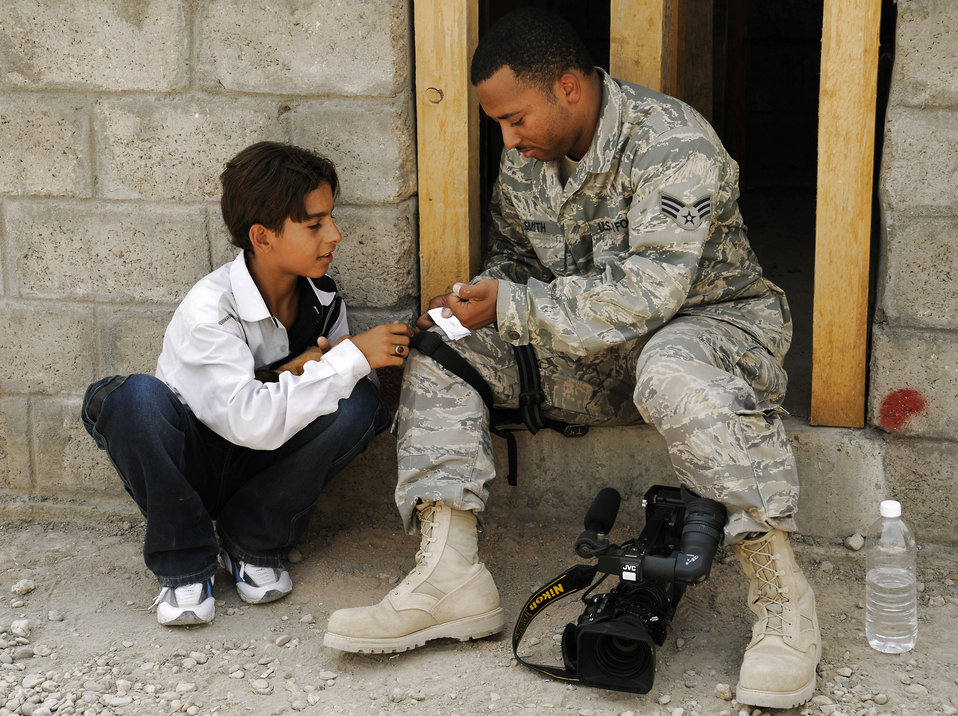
RED HORSE Airmen give Iraqis reason for hope

Senior Airman Robert Smith shows an Iraqi boy how to write his name in English at Hawr Rajab, Iraq, Aug. 28. Airman Smith is a broadcaster with U.S. Air Forces Central -- Baghdad Media Outreach Team.